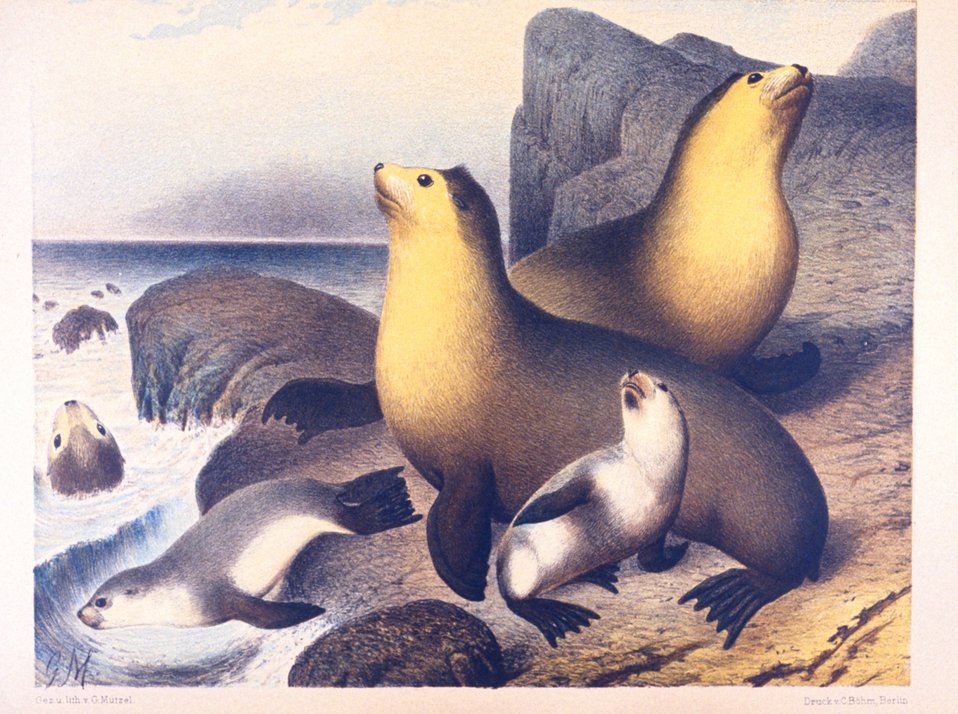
Water color of Arctocephalus gazella, the southern fur seal.